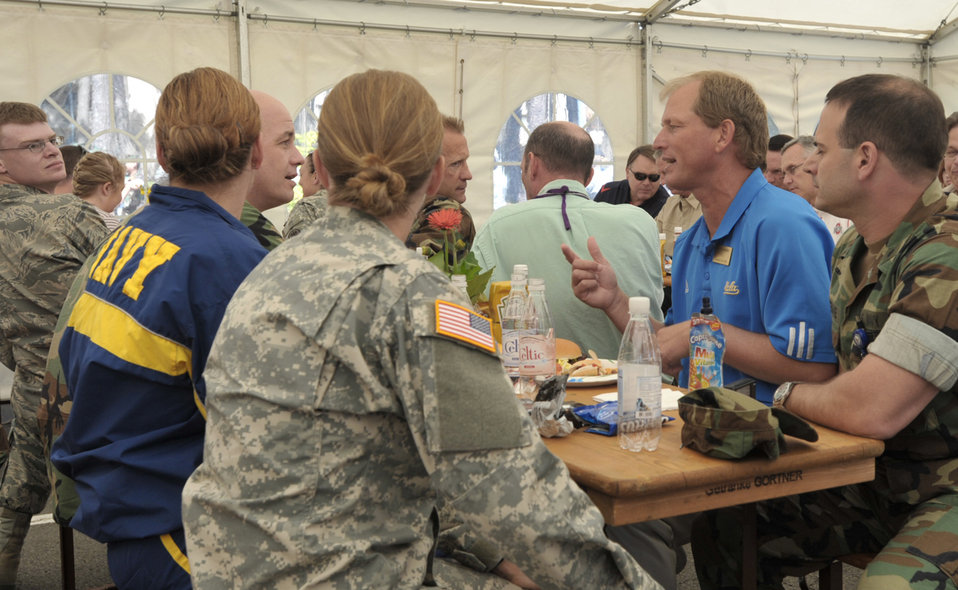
NCAA coaches visit troops in military hospital

UCLA Coach Rick Neuheisel has lunch with servicemembers stationed at a military hospital May 29 in Landstuhl, Germany. Coach Neuheisel is part of the Coaches Tour 2009, a morale-boosting mission that brings NCAA coaches to U.S. servicemembers.